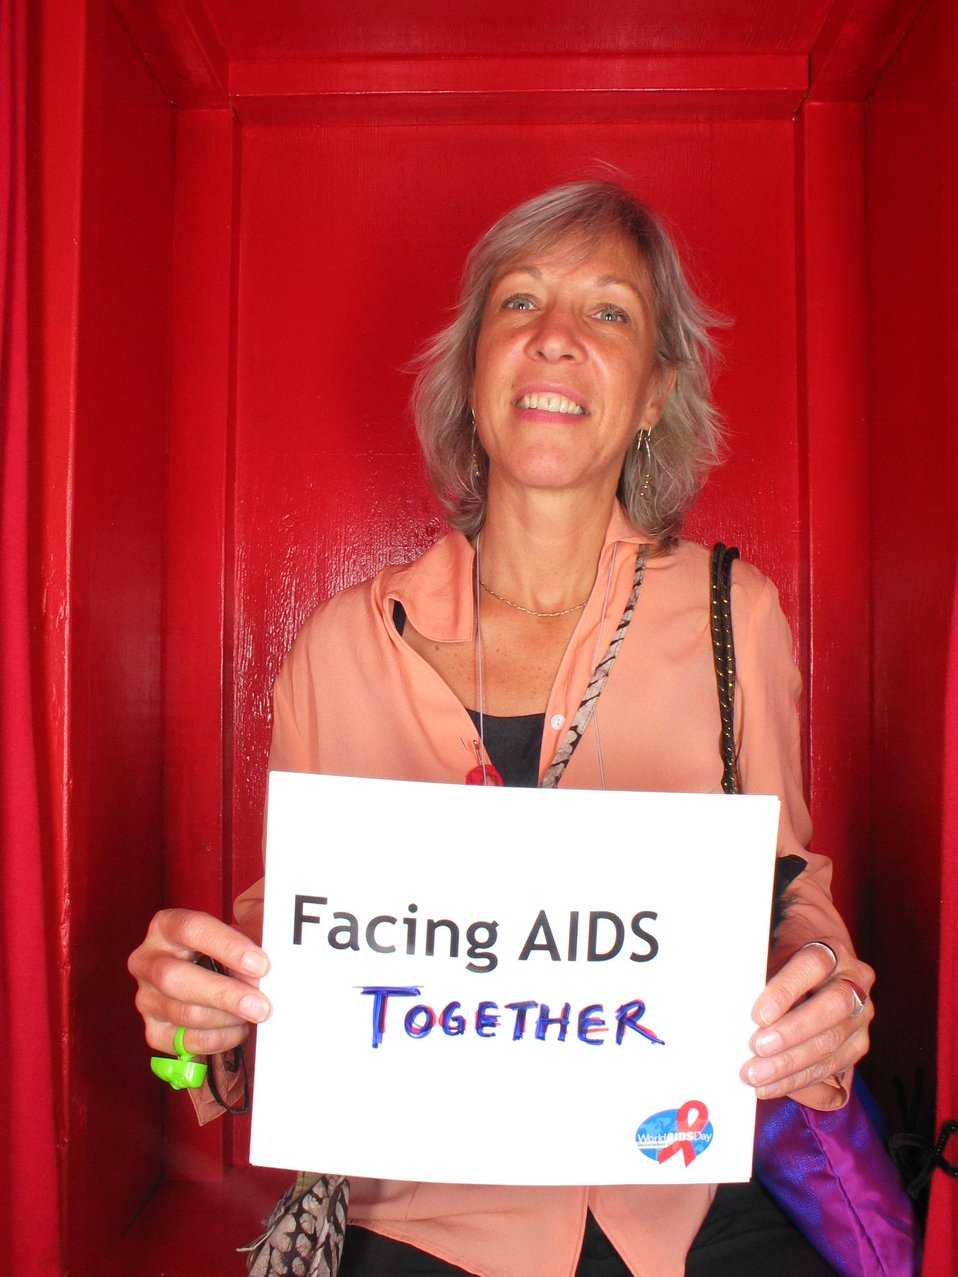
Facing AIDS together